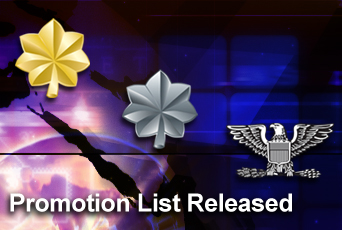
Officer promotion list released

The 2006C central selection boards have announced promotions for majors, lieutenant colonels and colonels.